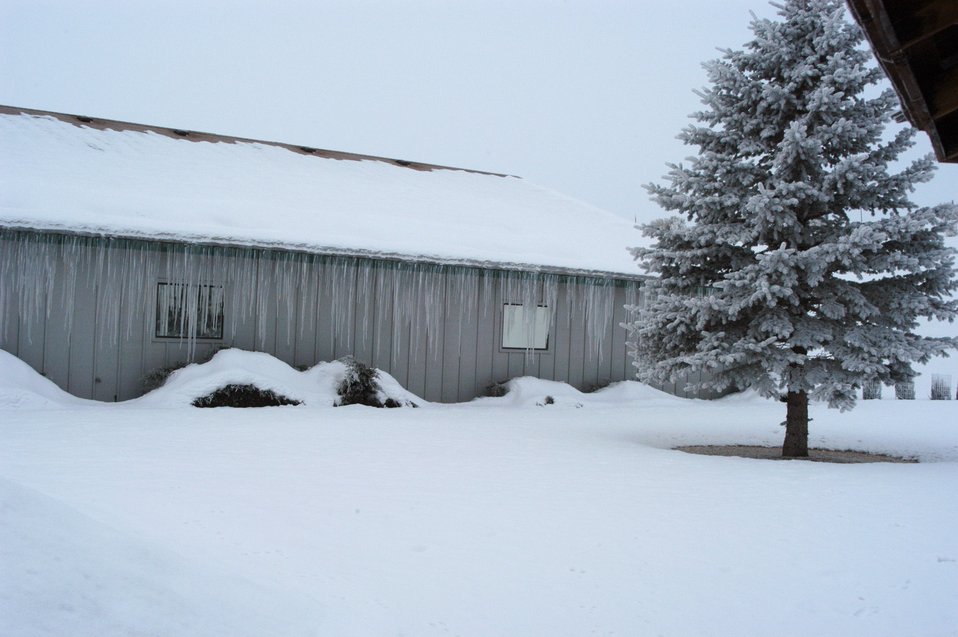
Burns District Office in Hines, Oregon January 22, 2004. Depicts snow accumulations with alternating thawing and freezing temperatures that created icicles over a two week period.